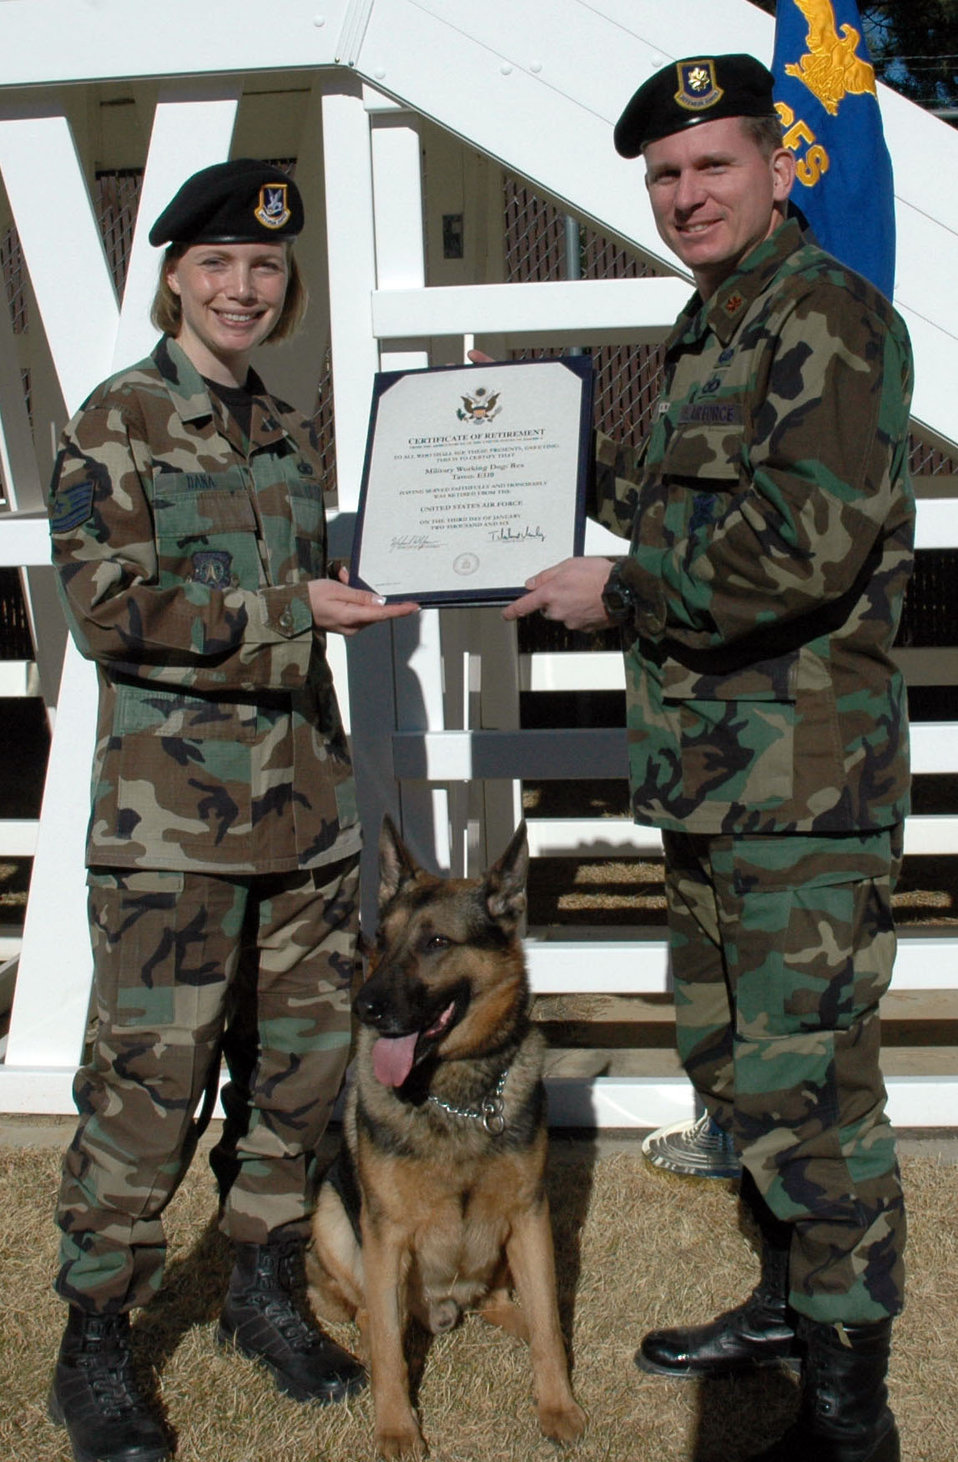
Rex the Dog

PETERSON AIR FORCE BASE, Colo. (AFPN) -- Tech. Sgt. Jamie Dana receives the official retirement certificate for military working dog, Rex, from Maj. Paul Cairney. The certificate retiring Rex was signed by Chief of Staff of the Air Force Gen. T. Michael Moseley, and Secretary of the Air Force Michael W. Wynne. Sergeant Dana is the first military working dog handler to adopt her working dog from active-duty service thanks to a new defense appropriations bill. Sergeant Dana is a military working dog handler with the 21st Security Forces Squadron. Major Cairney is the commander of the 21st SFS.